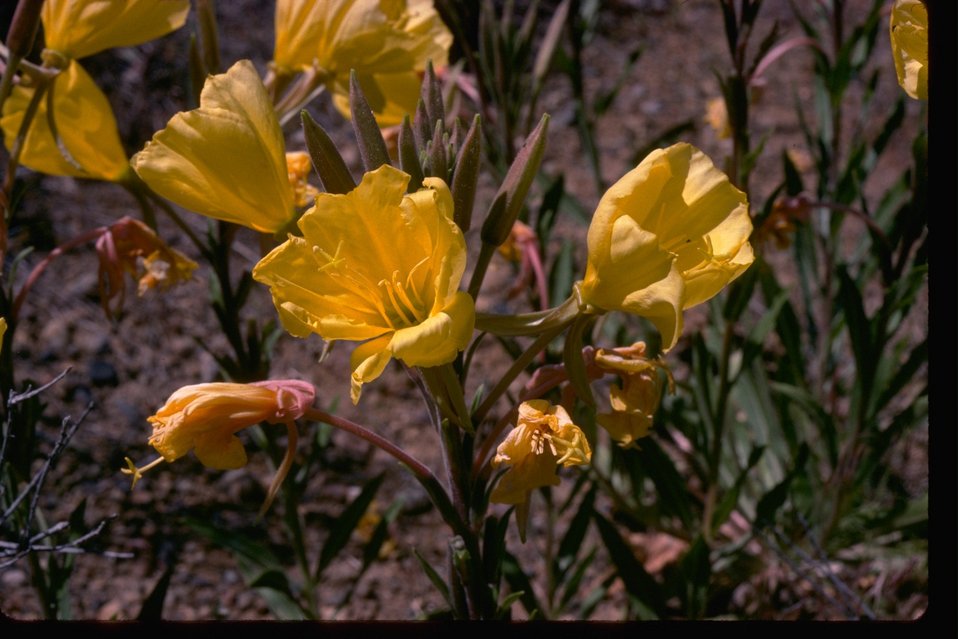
Genethere Hooker